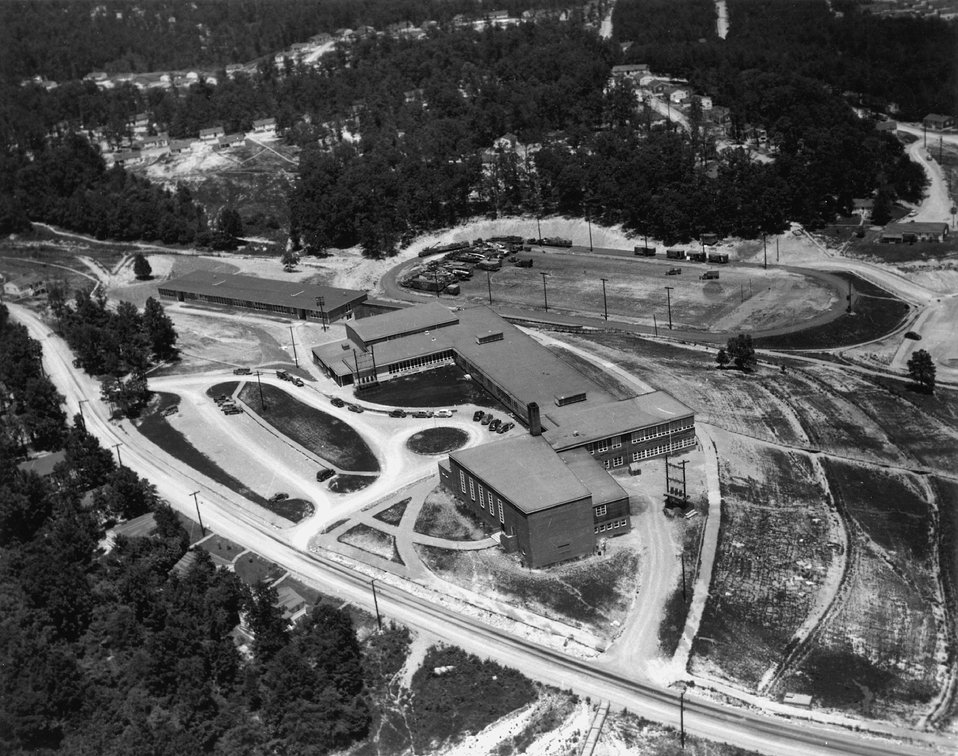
Oak Ridge High School. c. 1945